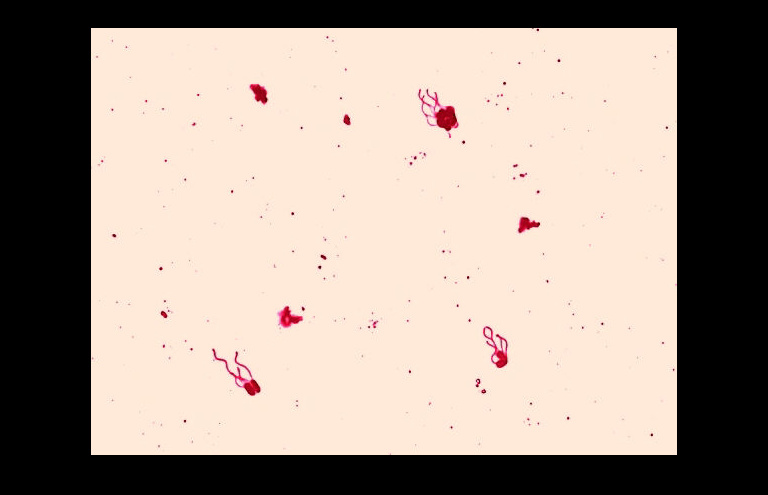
Alcaligenes faecalis. Leifson flagella stain (digitally colorized).